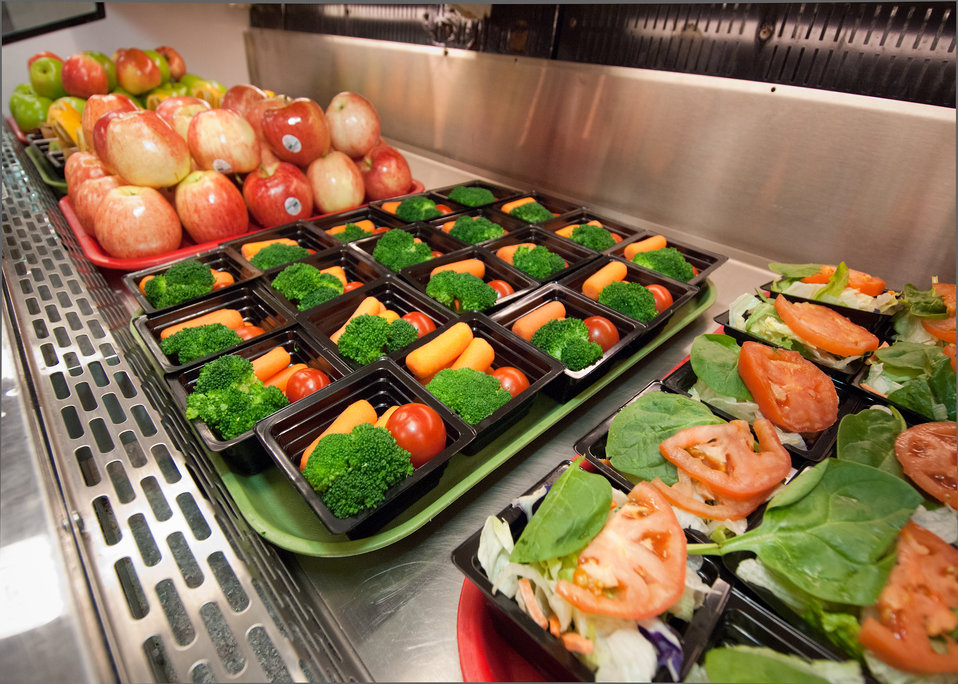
Healthy choices of fresh fruit, salads and vegetables at Washington-Lee High School in Arlington, Virginia for lunch service on Wednesday, October 19, 2011. The fruit, salads and vegetables are available through the National School Lunch Program. The National School Lunch Program is a federally assisted meal program administered by the United States Department of Agriculture, Food and Nutrition Service operating in public, nonprofit private schools and residential child care institutions. It provides nutritionally balanced, low-cost or free lunches to children each school day.